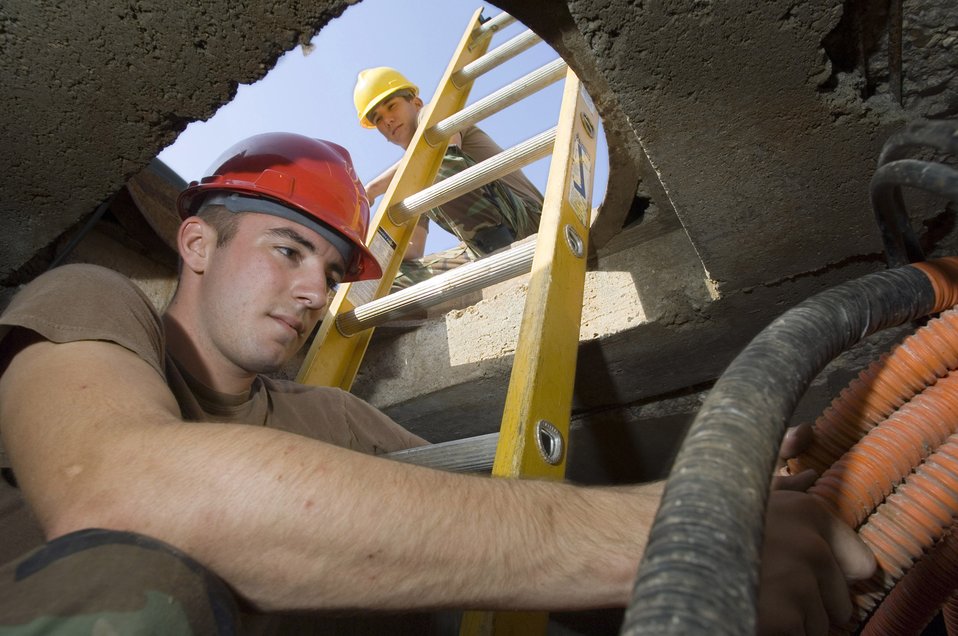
Down a manhole

Airman 1st Class Jeremi Welborn searches for a fiber optic cable as Airman Kenneth Townsend waits to assist outside a manhole at Ramstein Air Base, Germany, Sept. 11, 2006. They are cable maintainers with Ramstein's 435th Communications Squadron.